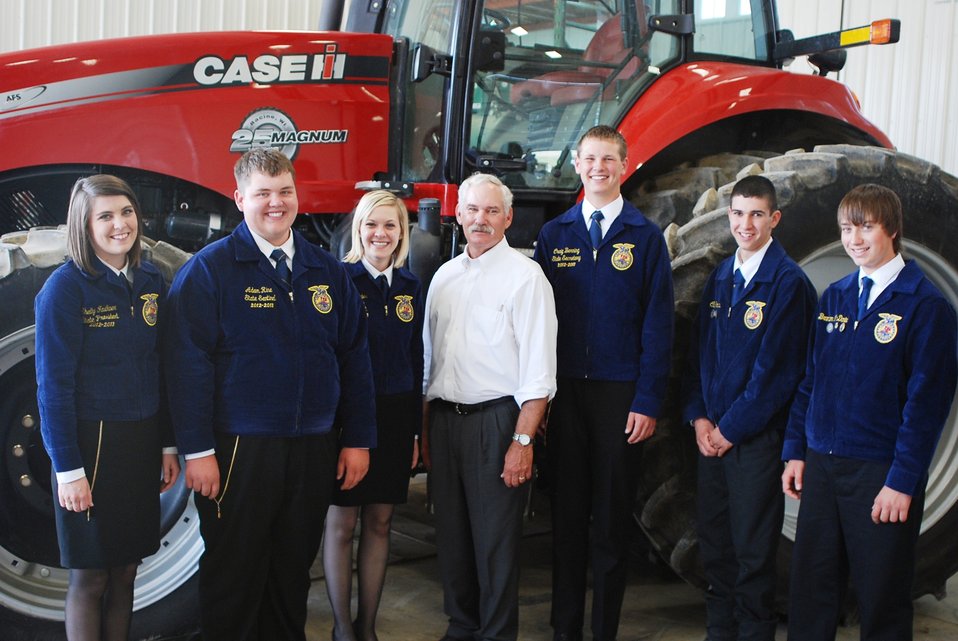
Agriculture Acting Deputy Agriculture Secretary Michael Scuse stands with Ohio FFA members in Licking County, OH on Thursday, May 30, 2013.